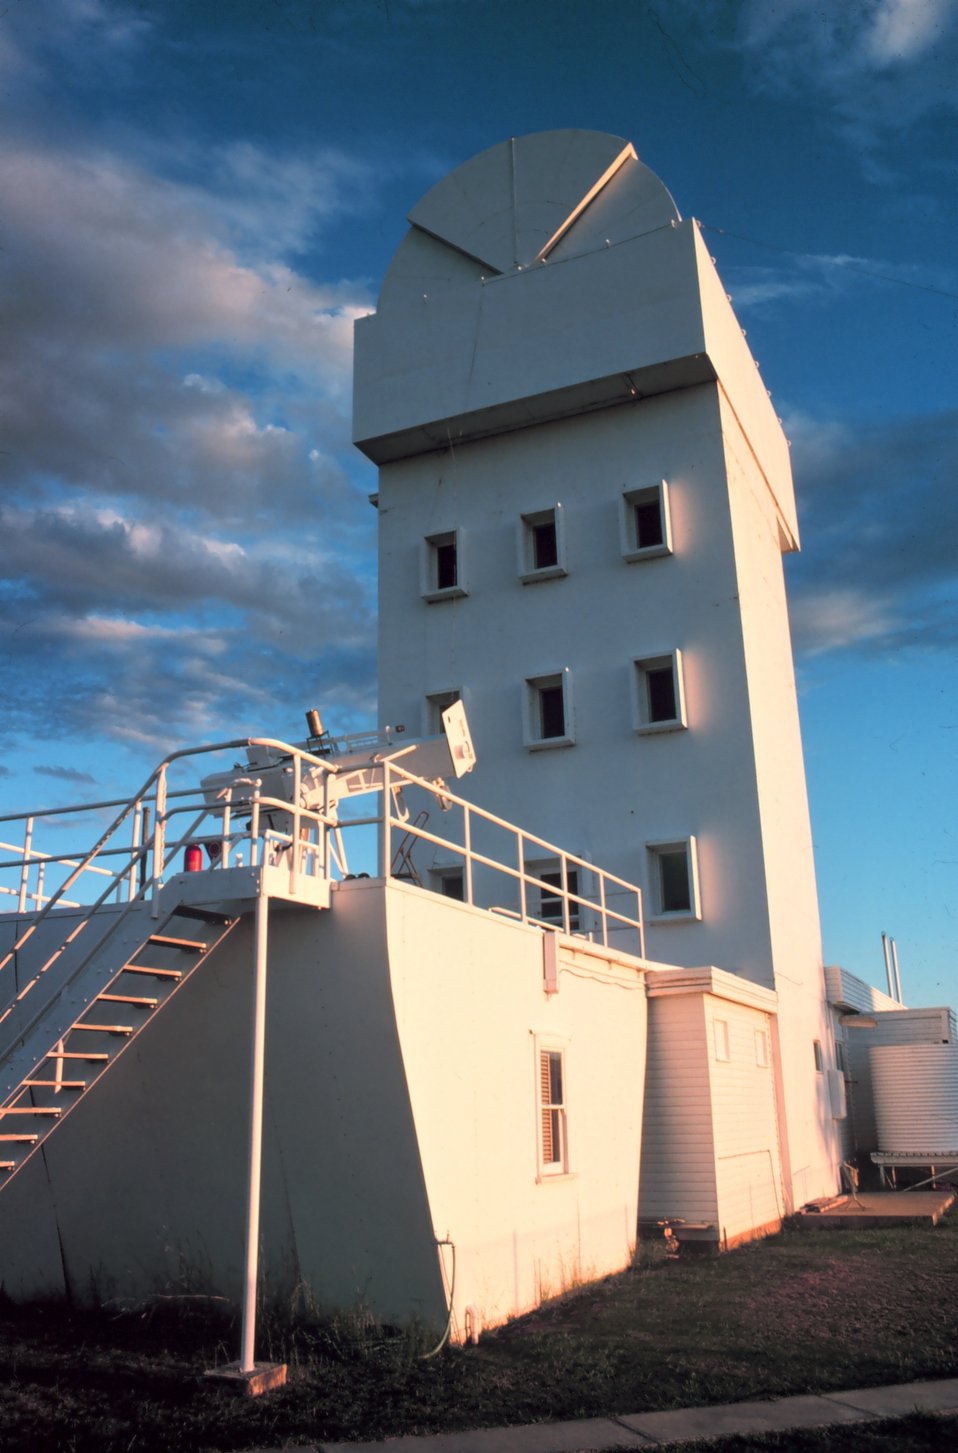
The old Ionospheric Prediction Service solar observatory in Australia. This facility was shared with CSIRO.